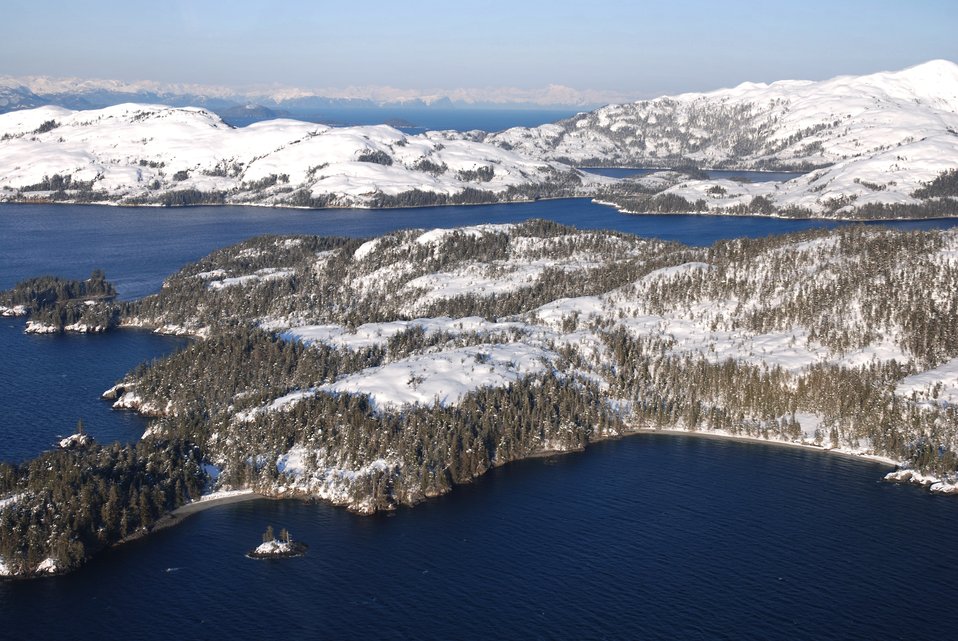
Evans Island and the labyrinthine waterways of western Prince William Sound